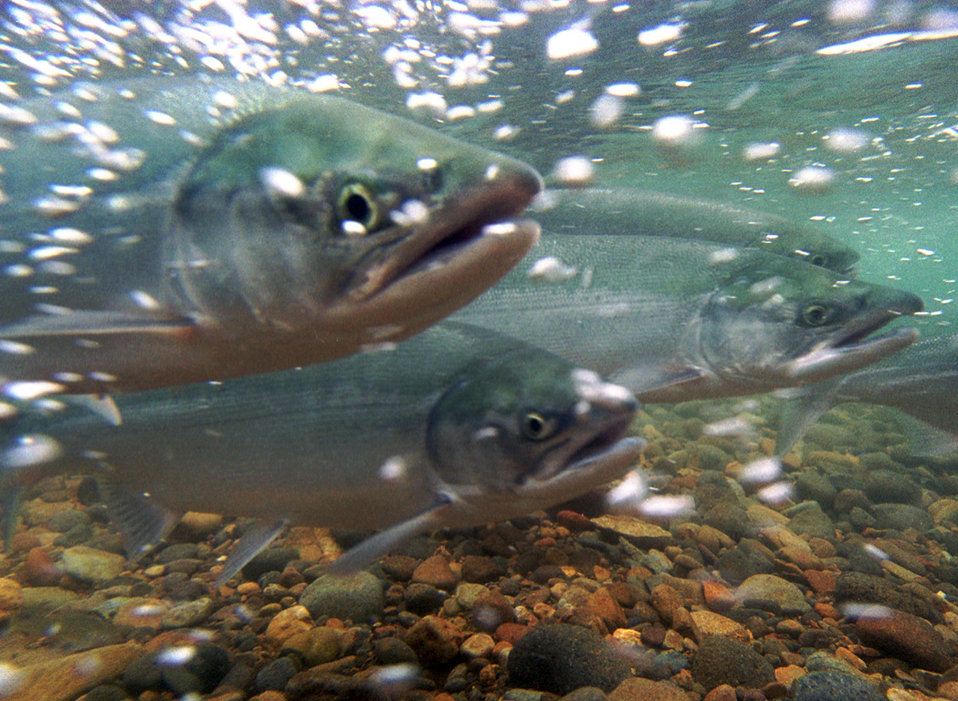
salmon migration